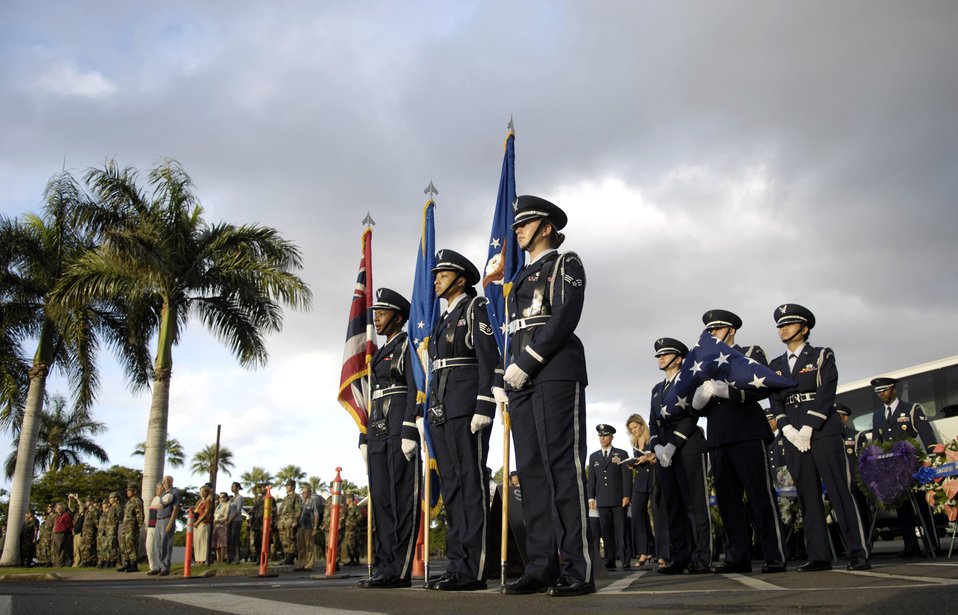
65th Anniversary

Hickam Air Force base honor guard commemorates the 65th anniversary of the Pearl Harbor attack Dec. 7, 1941, on then Hickam Field, Hawaii. A ceremony at the base flagpole was held Dec. 7 to honor the 189 who died and 303 who were wounded during the attack.